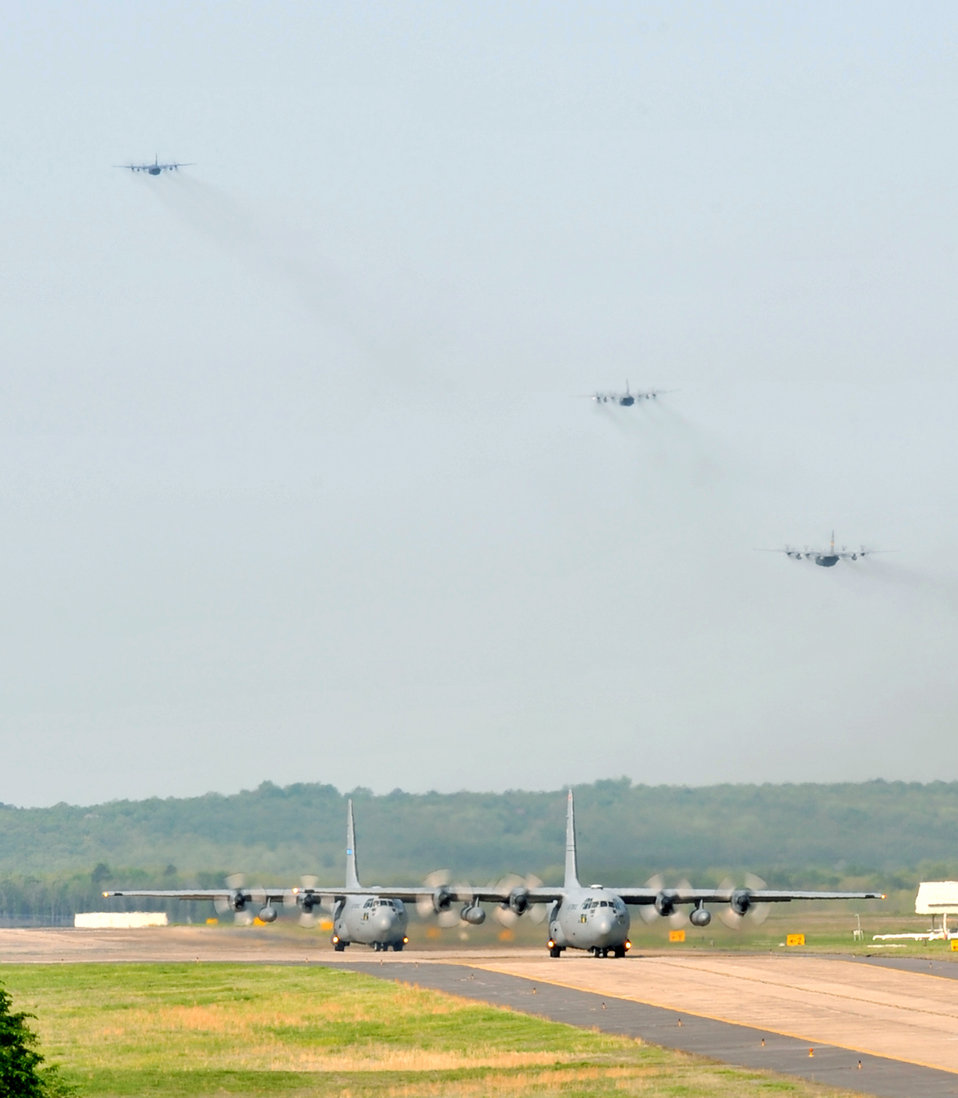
Surge week

Several C-130 Hercules taxi and take off April 14, 2011, at Little Rock Air Force Base, Ark.